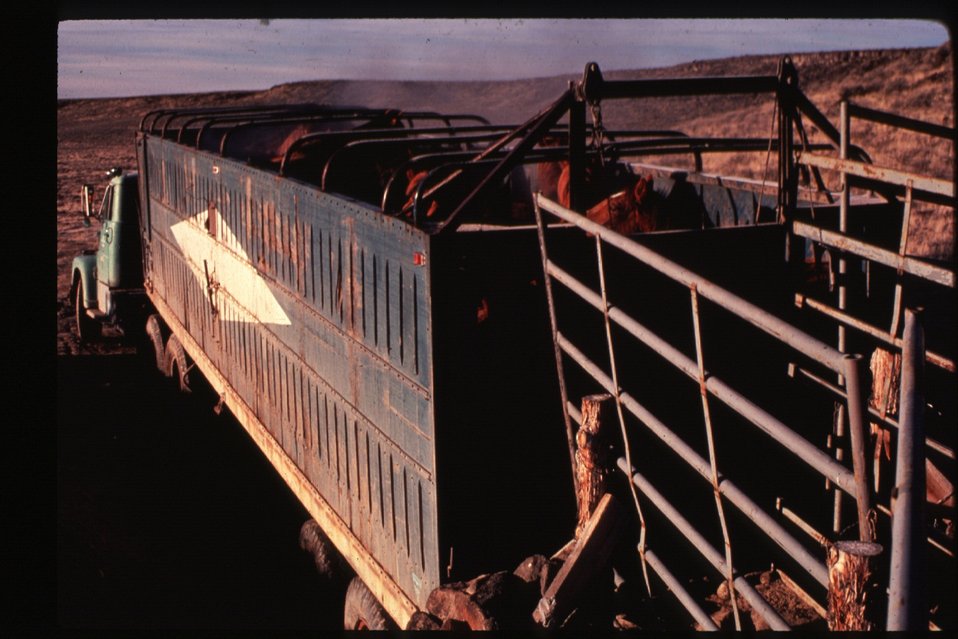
Wild horse transportation Wild Horse and Burro Adoption Program LSRD Lower Snake River District